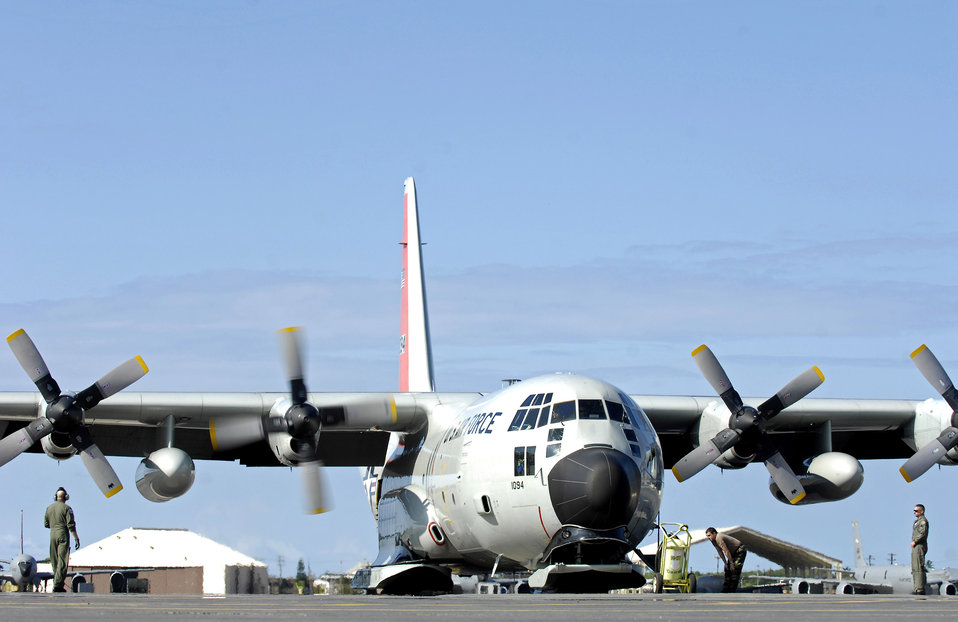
C-130s depart for 'Ice'

0A loadmaster and maintainers conduct engine start-up checks before departing from Oct. 17 from Hickam Air Force Base, Hawaii. Ski-equipped LC-130 Hercules aircraft, crews and support personnel from the New York Air National Guard's 109th Airlift Wing are transiting Hickam and will begin deploying to McMurdo Station, Antarctica, to support the 13 th Air Force-led Joint Task Force Support Forces Antarctica, Operation Deep Freeze.